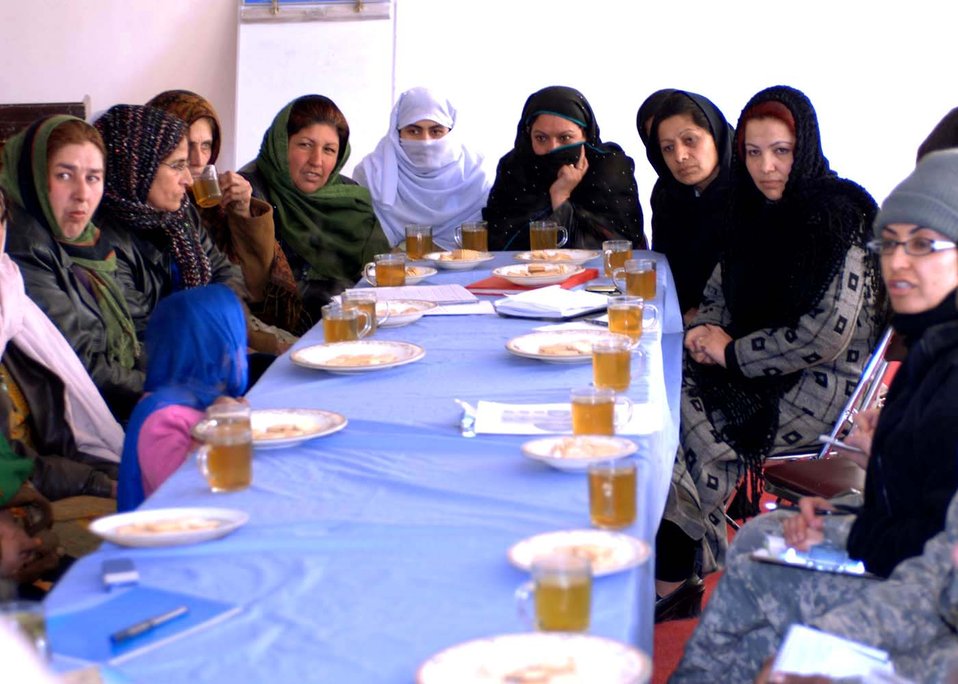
AF team addresses local province women's needs

Women from the Kapisa Province met with the Bagram Provincial Reconstruction Team Jan. 22 to discuss issues within their respective districts. The women were representatives from six of the seven districts in the province.